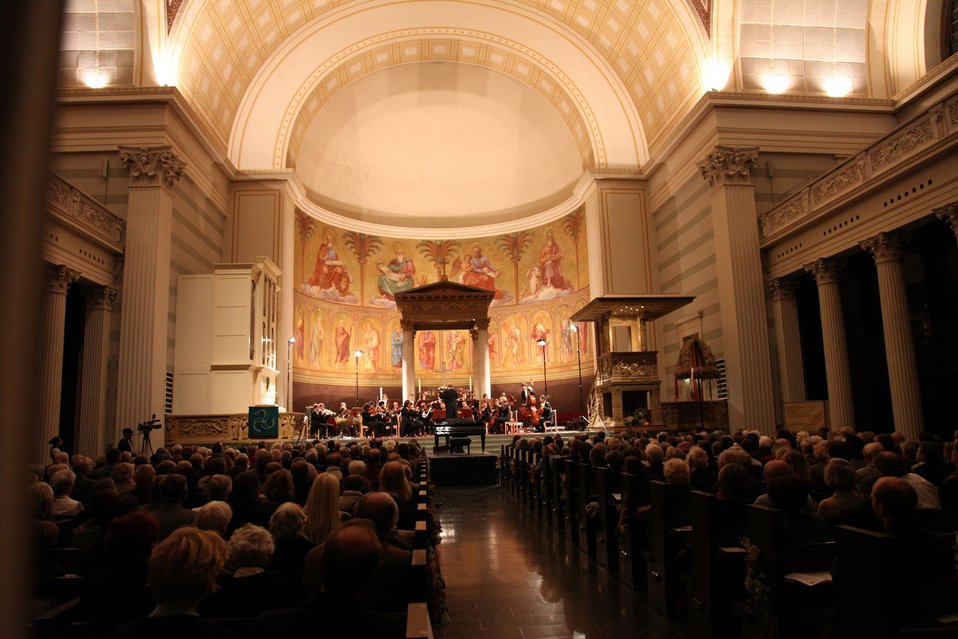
Ambassador Murphy Gives a Speech on the 20th Anniversary of German Unity

U.S. Ambassador to Germany Philip D. Murphy gives a speech on the 20th anniversary of German unity in Potsdam, Germany, on October 2, 2010.